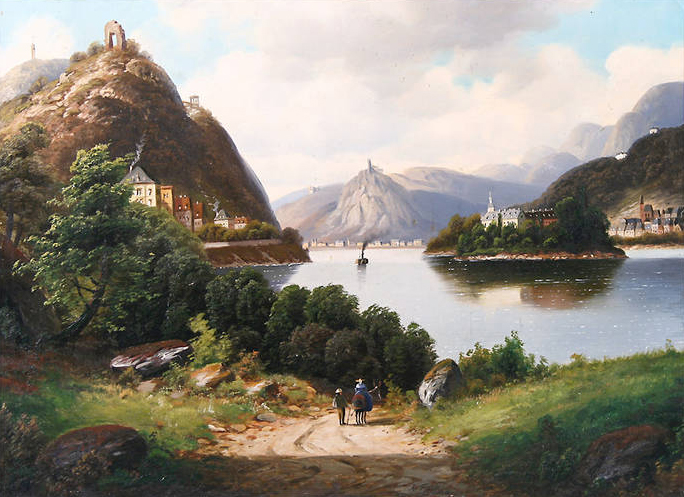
Deutsch: Nonnenwerth, Rolandseck und Drachenfels. Stadtmuseum Bonn